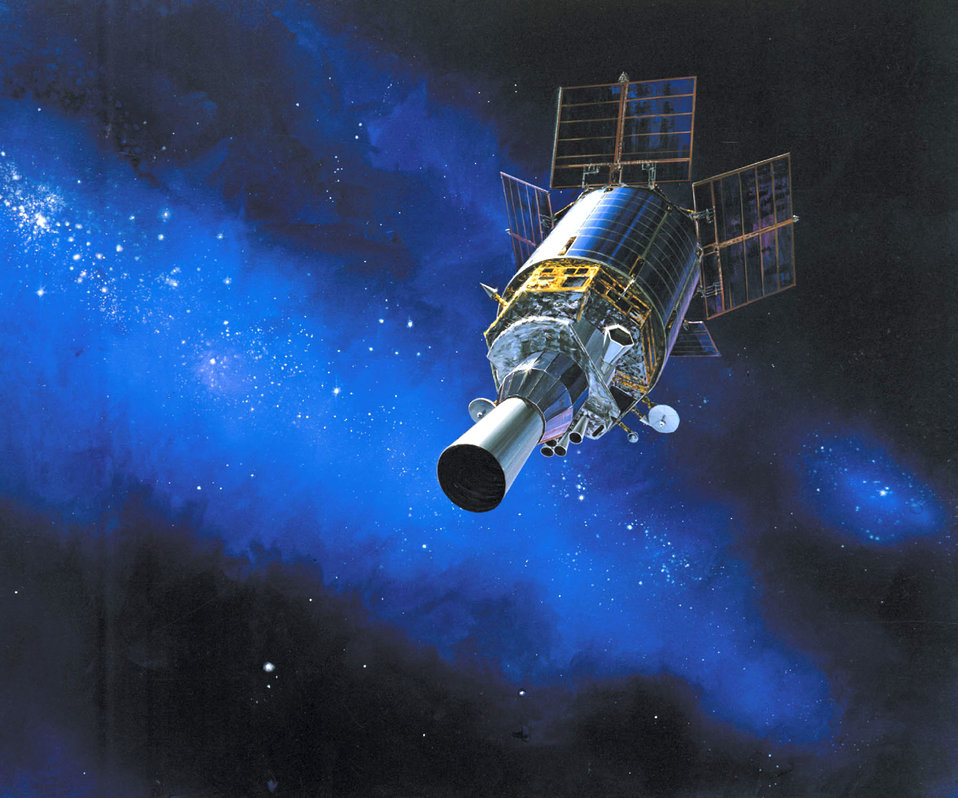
DSP satellite

Artist rendering of a Defense Support Program satellite in orbit.